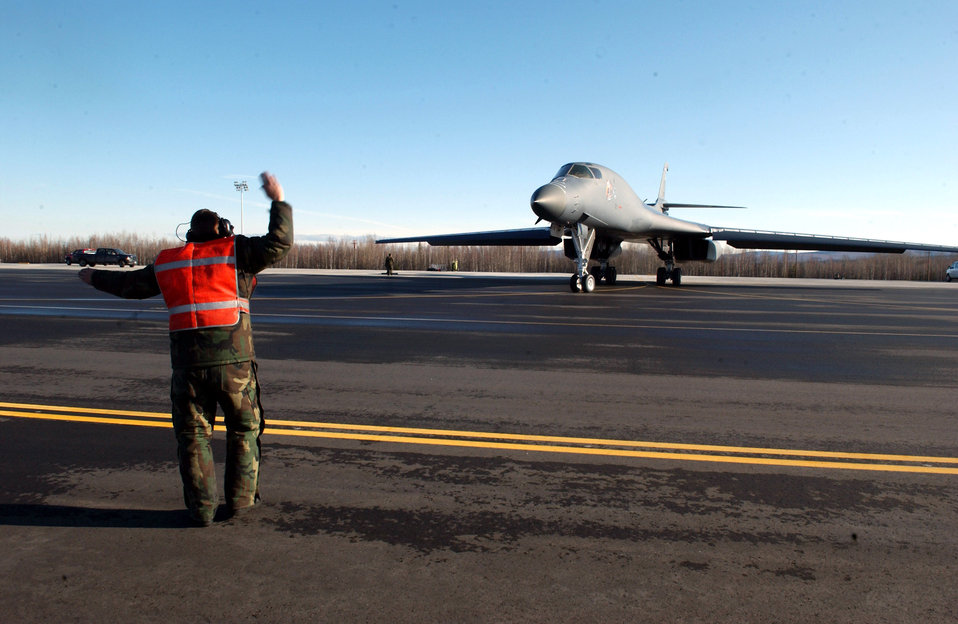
Air combat ready at Red Flag-Alaska

Senior Airman Michael Anderson marshals a B-1B Lancer April 13 at Eielson Air Force Base, Alaska, during Red Flag-Alaska 07-1. Red Flag-Alaska is a Pacific Air Forces-directed field training exercise for U.S. forces flown under simulated air combat conditions. It is conducted on the Pacific Alaskan Range Complex with air operations flown out of Eielson and Elmendorf Air Force Bases. Airman Anderson is assigned to the 28th Aircraft Maintenance Squadron at Ellsworth AFB, S.D.